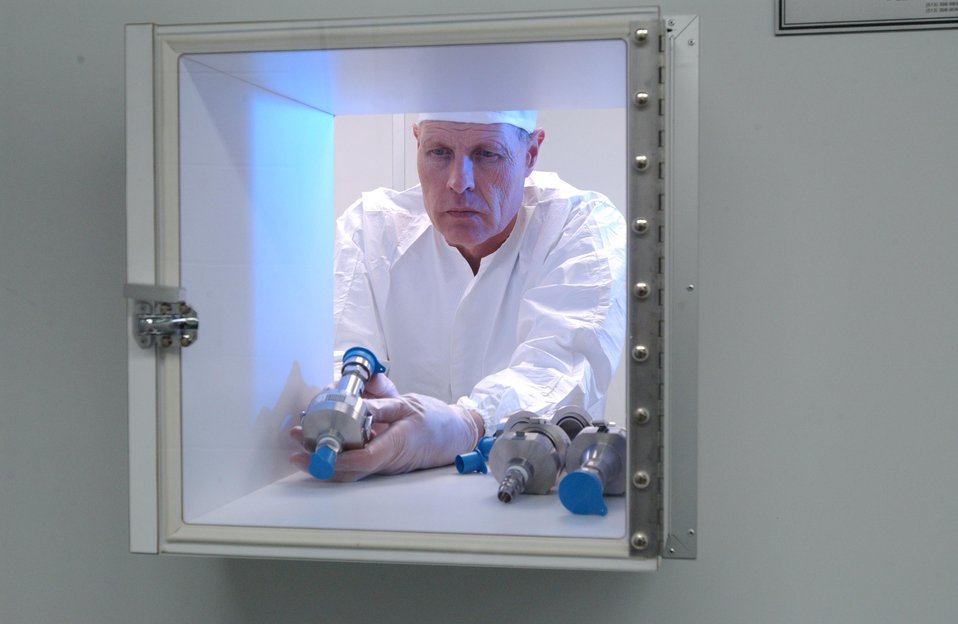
A RESEARCHER AT NATIONAL RENEWABLE ENERGY LABORATORY'S RENEWABLE FUELS AND LUBRICANTS LABORATORY (REFUEL) USES THE CLEAN ROOM TO GATHER EMISSIONS DATA FROM FUTURE FUELS AND ADVANCED ENGINES.

THE REFUEL LABORATORY IS THE FIRST LAB IN THE U.S. DEDICATED TO RESEARCHING AN DEVELOPING RENEWABLE AND SYNTHETIC FUELS AND LUBRICANTS FOR HEAVY-DUTY TRANSPORTATION APPLICATIONS. IT IS ALSO THE ONLY LAB TO EVALUATE THE EFFECTS OF OPERATING HEAVY-DUTY VEHICLES AT HIGH ALTITUDE.